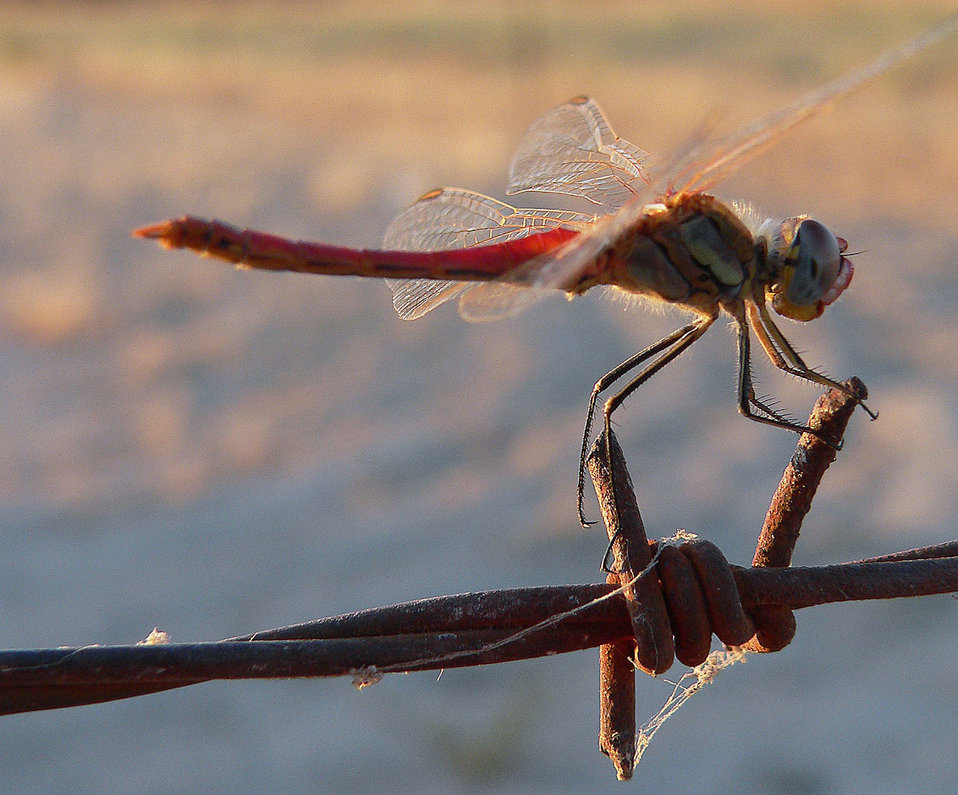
Dragonfly and wire

Environment habitat at camp site.